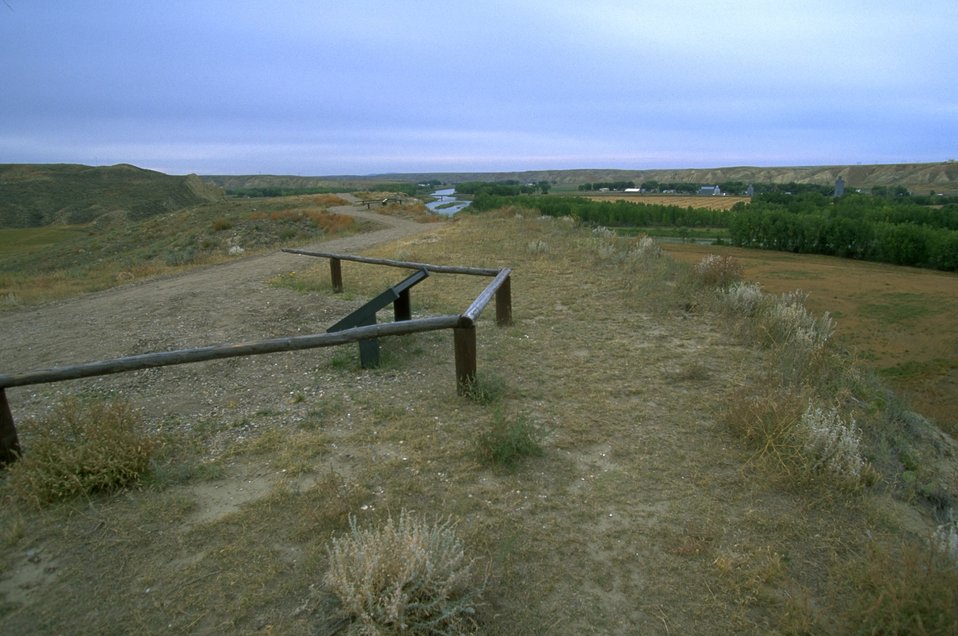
Interpretive signing at Decision Point